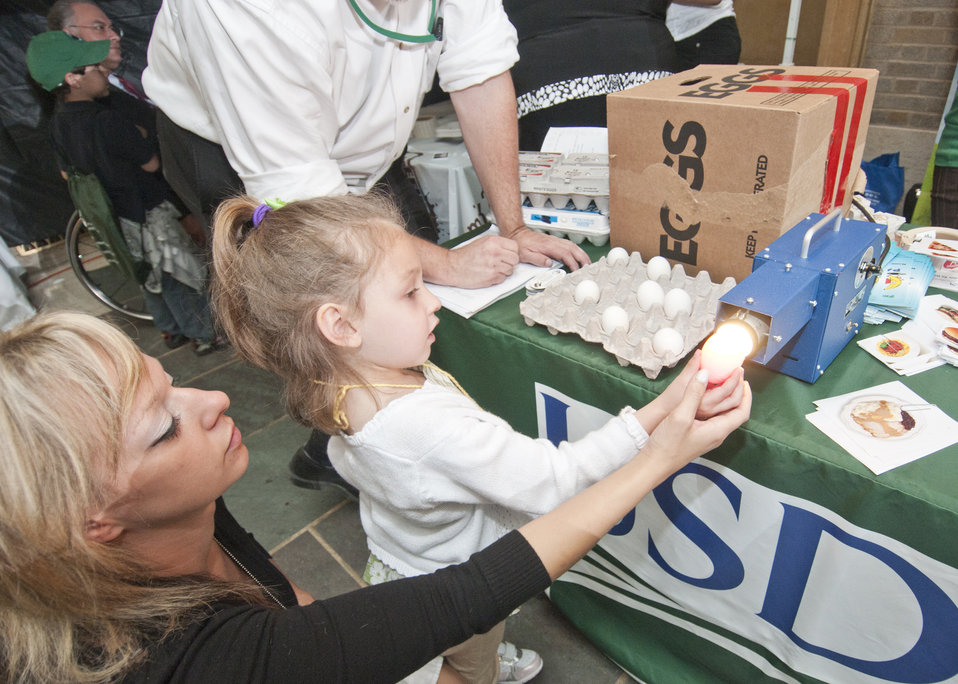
The U. S. Department of Agriculture (USDA) held its annual “Take Your Child to Work Day” on the patio of the Whitten Building, in Washington, DC, on Thursday, April 28, 2011. The program is designed to introduce young people to USDA’s wide range of responsibilities and services. Hailey Vega and her mother Lacey Hicks learn how to candle eggs at the Agricultural Marketing Service exhibit at Agriculture’s “Take Your Child to Work Day” event.